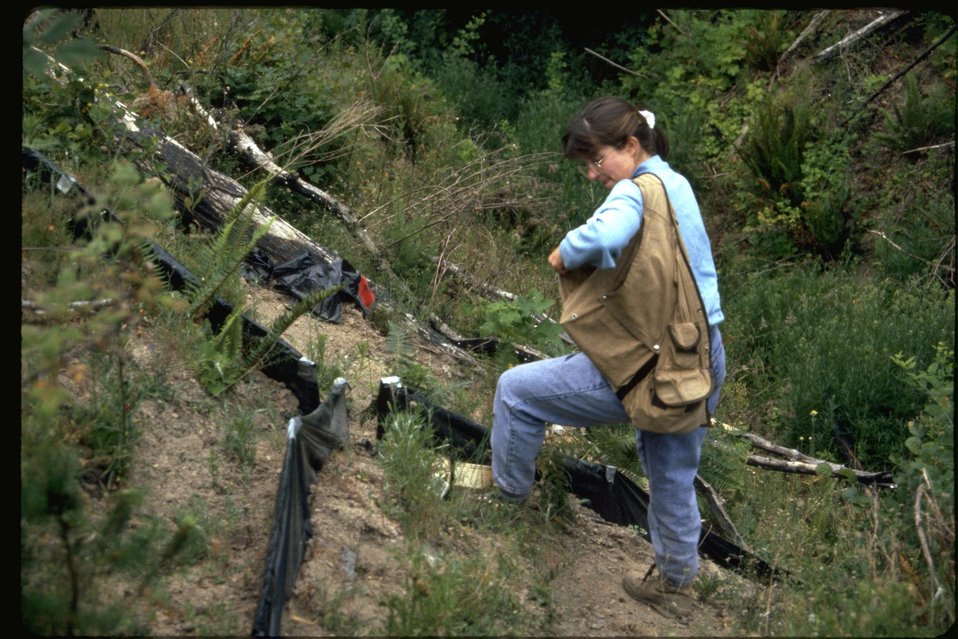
Wendy working on amphibian study in clear cut.